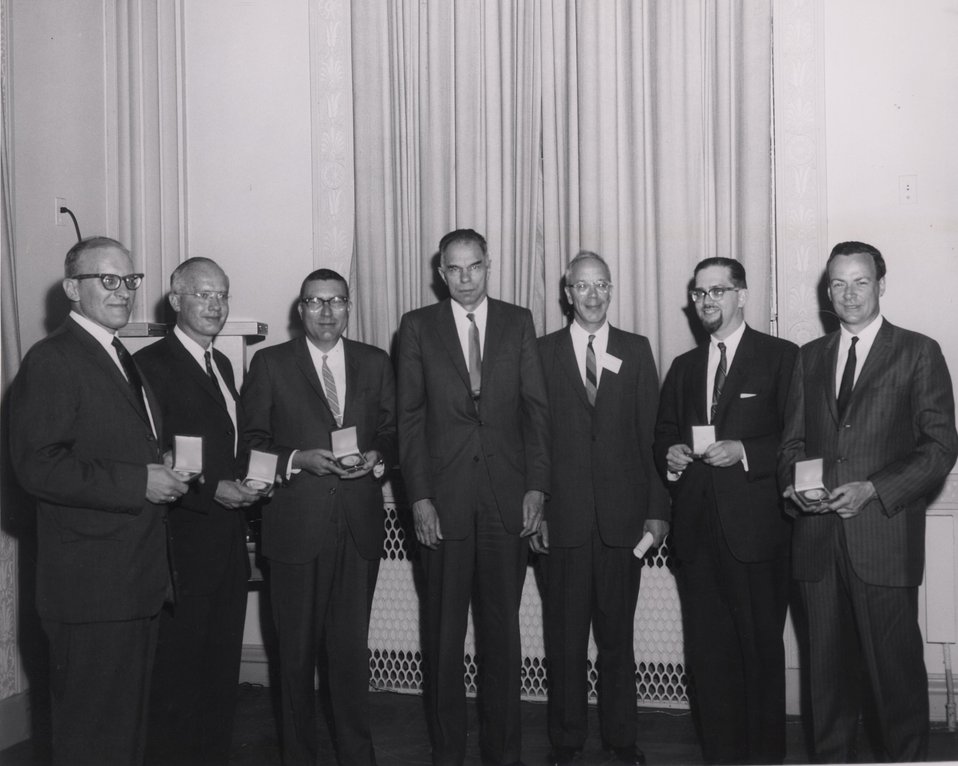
Lawrence Award Ceremony, 1962. Dr. Turkevich, Dr. Benson, Dr. York, Dr. Seaborg, Dr. Benedict, Dr. Goldstein, Dr. Feynman.